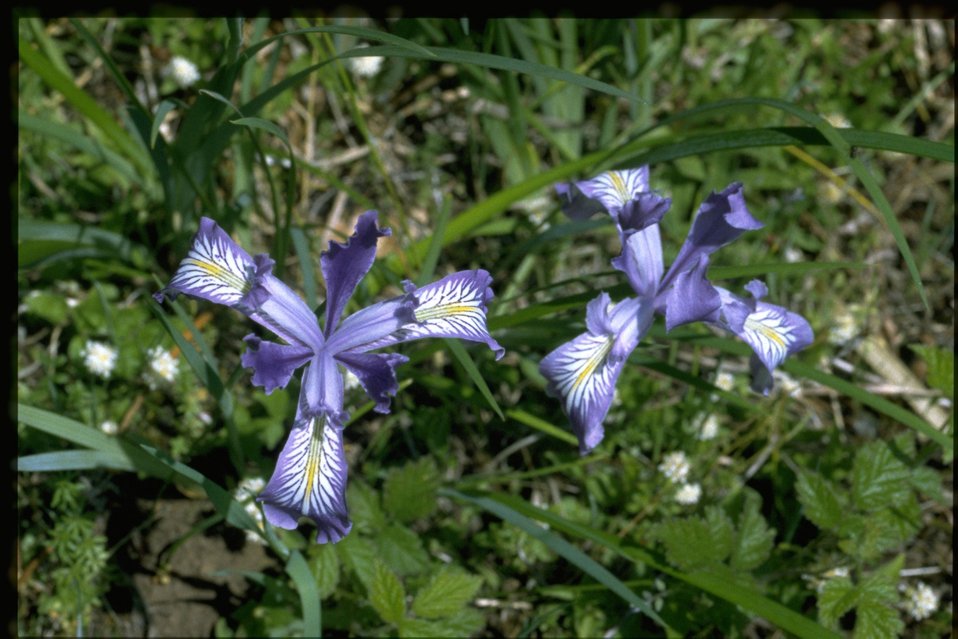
Medium shot of Iris tenax.